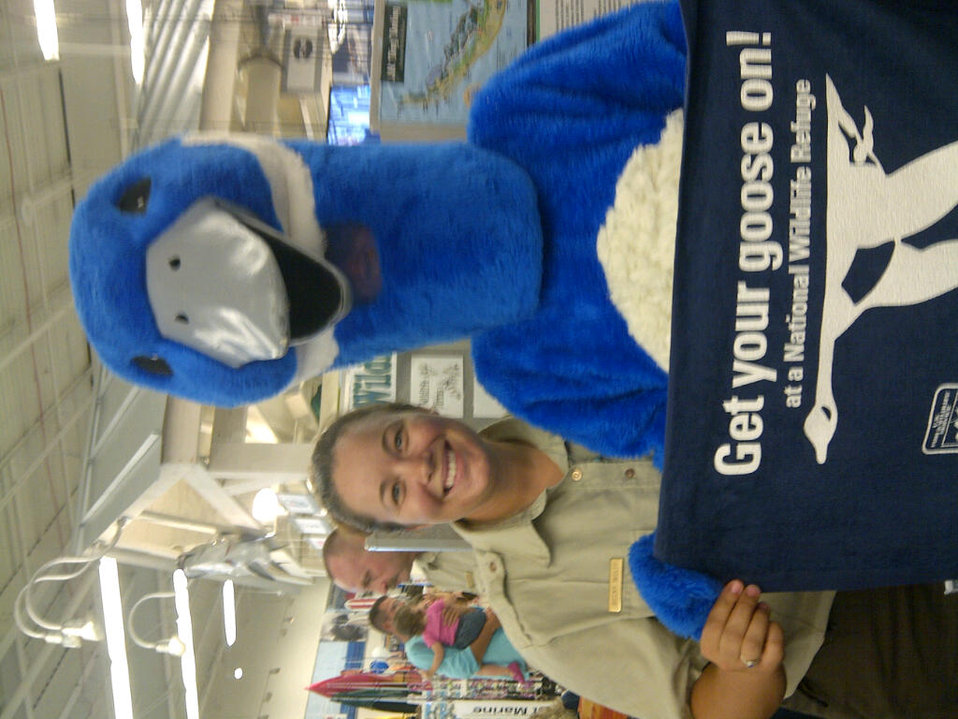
Get Your Goose On!